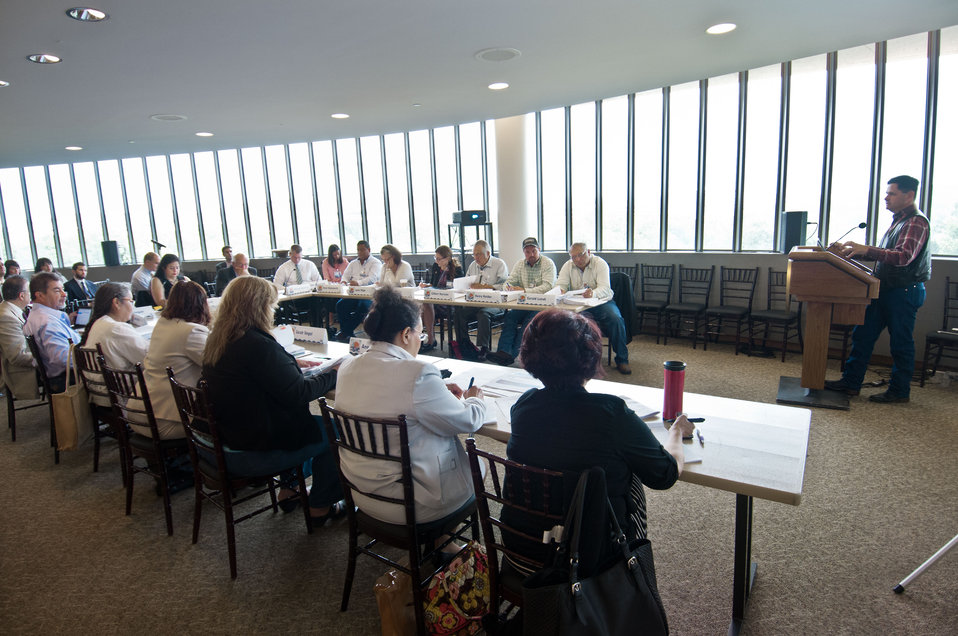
U.S. Department of Agriculture (USDA) Office of Tribal Relations (OTR) and the Intertribal Agriculture Council (IAC) Program Manager Zach Ducheneaux speaks at the first business meeting and public comment session of USDA's Council for Native American Farming and Ranching (CNAFR), held on Tuesday, Aug. 14, 2012 at the National Museum of the American Indian, in Washington, D.C. CNAFR was created to advise the Secretary on ways to eliminate barriers to participation for Native American Farmers and Ranchers in USDA programs. The Council was established as part of the Keepseagle settlement, and is conducted under the oversight of USDA's Office of Tribal Relations, which is part of the Office of the Secretary of Agriculture. The Director of Tribal Relations Joanna Mounce Stancil serves as Designated Federal Official (DFO) for the Council.